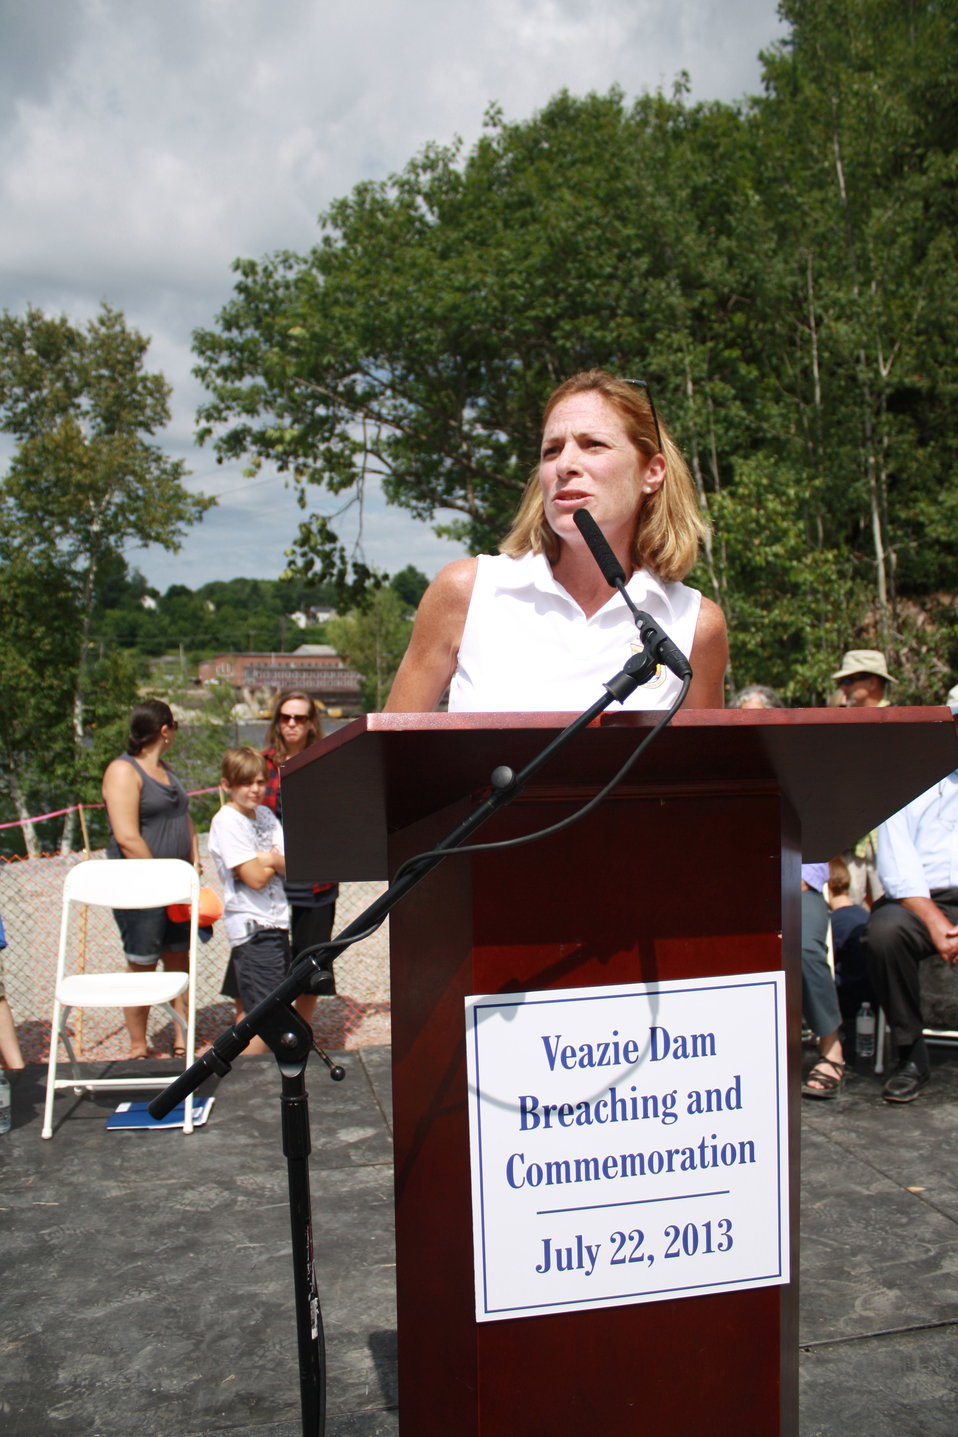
Veazie Dam Removal

U.S. Fish and Wildlife Service Northeast Regional Director Wendi Weber.